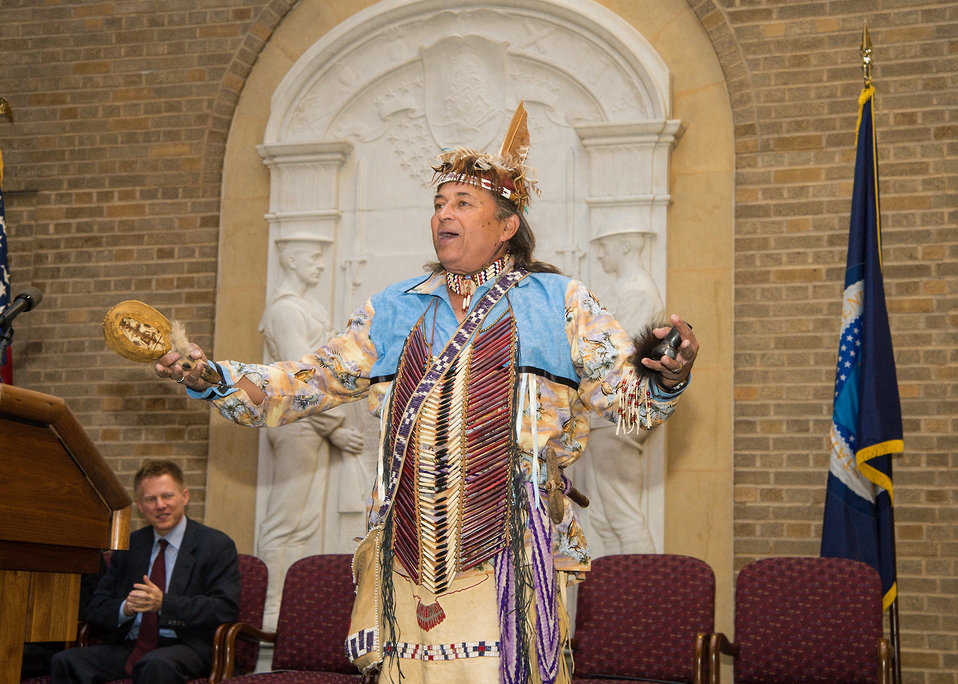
Cheroenhaka Nottoway Indian Tribe Chief Walter D. “Red Hawk” Brown III presents a history of the First American Tribes of Virginia at the 2013 American Indian and Alaska Native Heritage Observance at the U.S. Department of Agriculture (USDA), on Thursday, Nov. 14, 2013 in Washington, D.C. The theme of this year’s event was “Guiding Our Destiny with Heritage and Traditions.”